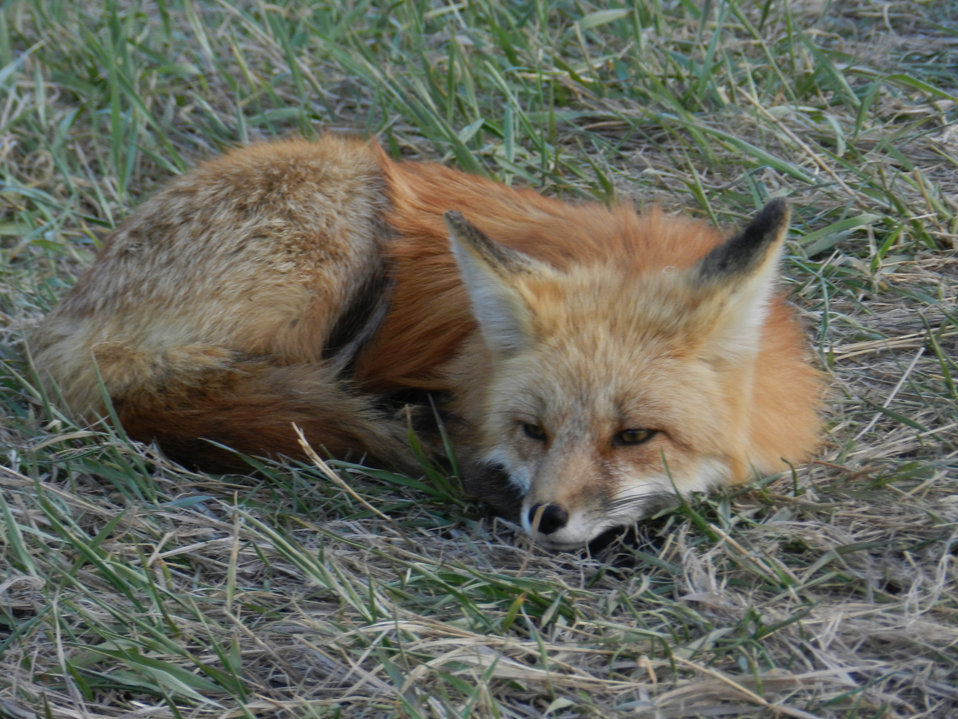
Red fox in urban open space, Fort Collins, CO.

Credit: Pedro 'Pete' Ramirez, Jr. / USFWS